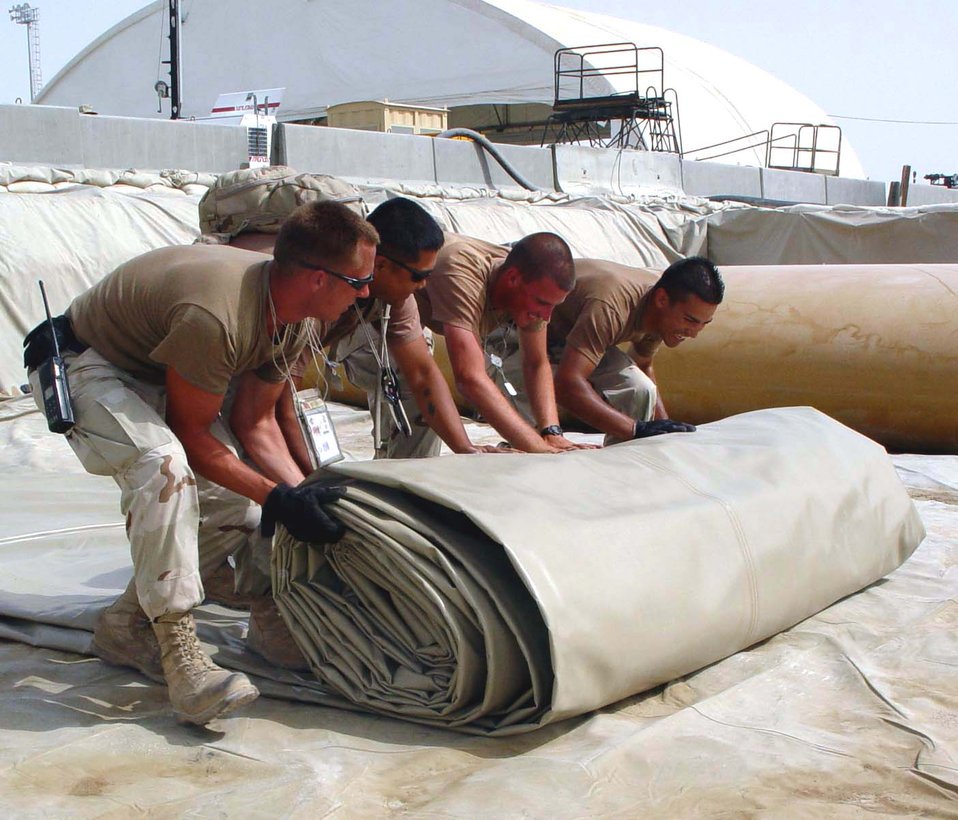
Roll out the bladder

SOUTHWEST ASIA -- Airmen unroll a 50,000-gallon fuel bladder at a forward-deployed location. Fuels flight Airmen from the 380th Air Expeditionary Wing have replaced 10 bladders since March.